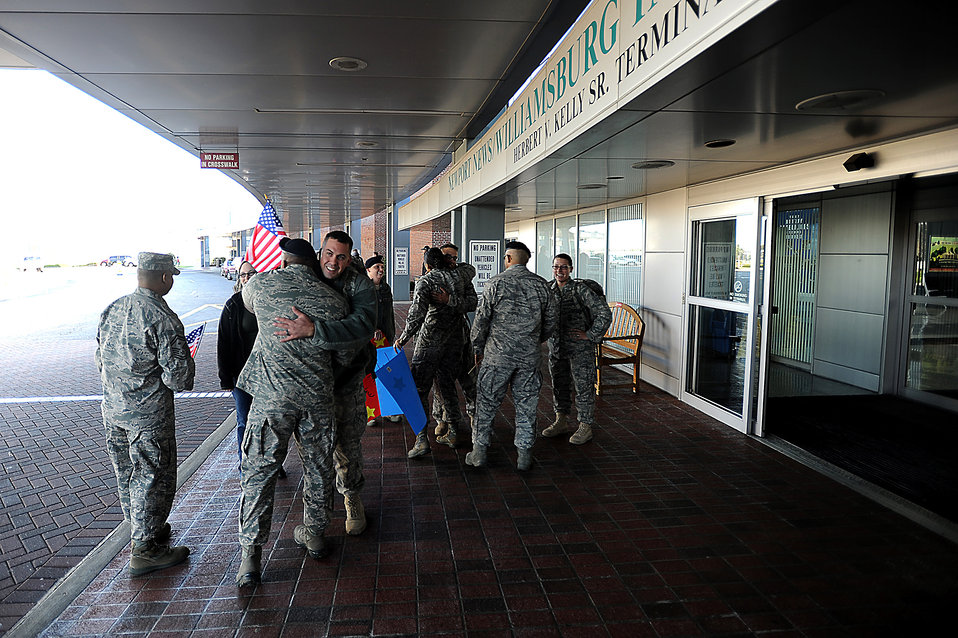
Langley SFS welcomes home deployed defenders

Members from the 633rd Security Forces Squadron welcome home Staff Sgt. John Duncan, Senior Airmen Kristian Robles Cruz and Amber Boyd, and Airman Basic Joseph Wesley on Nov. 2, 2011, at the Newport News, Va., airport. The four Airmen were among about 20 633rd SFS members who returned to Joint Base Langley-Eustis, Va., from deployment with the 332nd Expeditionary Security Forces Squadron at Joint Base Balad, Iraq, in the past week.